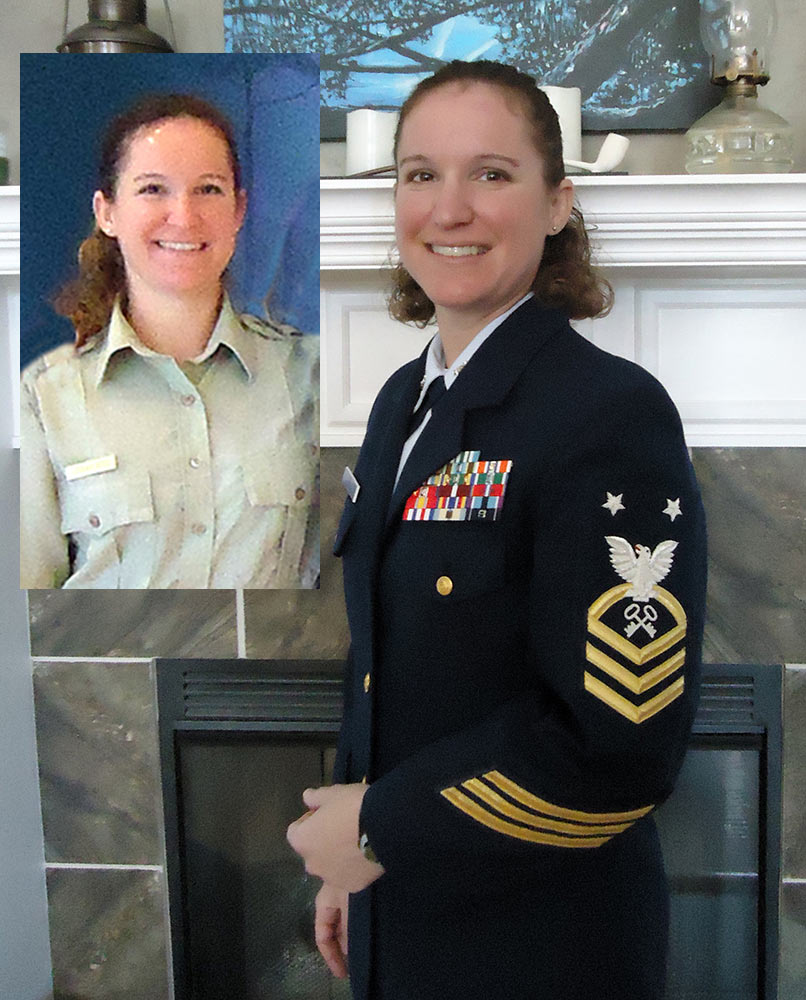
Sarah Hite-Southeast Region

Senior Chief Petty Officer (E8) Sarah Hite entered the U.S. Coast Guard in October 2000. She served four years of active duty in Kodiak, Alaska at Port Services as a non-rate and at the Air Station as a storekeeper. She entered the U.S. Coast Guard Reserve in 2004 and drilled in Tok, Alaska until she was recalled to active duty under Title 10 orders for Operation Iraqi Freedom. She served on active duty at Marine Safety Unit Port Arthur, TX from 2007 to 2008. She demobilized and continued to support the outload mission for Port Arthur during drills until she transferred to U.S. Northern Command (NORTHCOM) at Peterson AFB, CO from 2010 to 2012, where she worked in the joint logistics operation center. Now she reports to CG Base New Orleans, LA as the deputy chief of reserve operations. While in the Reserves, Sarah worked for The Boeing Company at Fort Greely, AK and for Raytheon Company at White Sands Missile Range, NM as a logistics specialist. She entered government service as the administrative officer for the U.S. Fish and Wildlife Service’s Gulf Coast Complex at Mississippi Sandhill Crane NWR in Gautier, MS August 2011. Hite’s professional awards include three Coast Guard achievement medals, a joint service commendation medal, several unit and team commendation ribbons, the global war terror service medal, armed forces reserve medal, four good conduct medals, and numerous contractor/civilian performance awards.